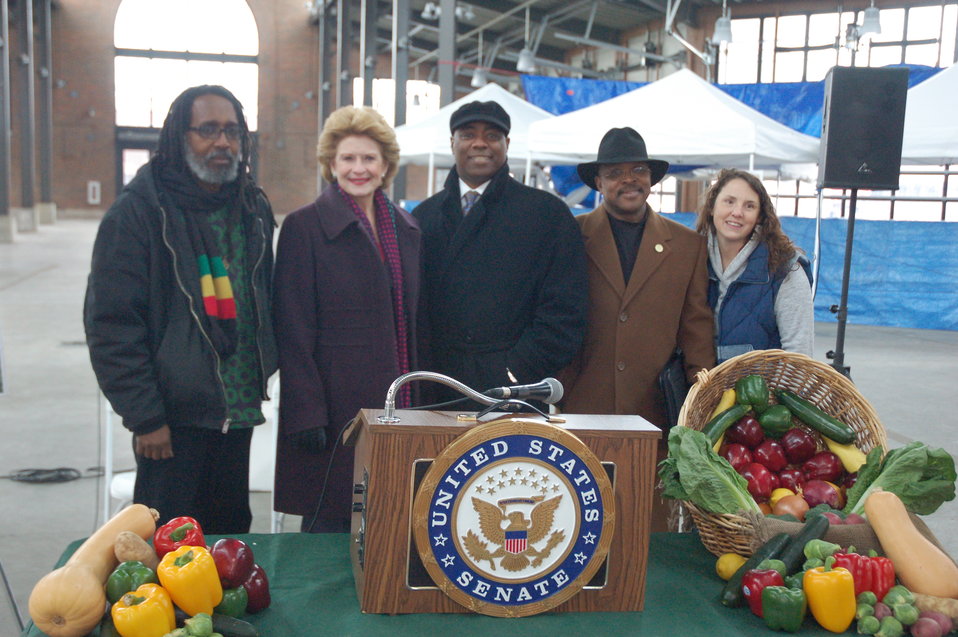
Eastern Market NRCS announcement

(L to R) Manager of D-Town Farms and Detroit Black Community Security Network Executive Director Malik Yakini; U.S. Senator Debbie Stabenow (MI), U.S. Department of Agriculture (USDA) Natural Resource Conservation Service (NRCS) Michigan State Conservationist Garry Lee, Southeast Michigan Resource Conservation and Development Council Board President Morse Brown, and Keep Growing Detroit Executive Director Ashley Akinson were together at Detroit’s Eastern Market to announce new funding for city high-tunnels.